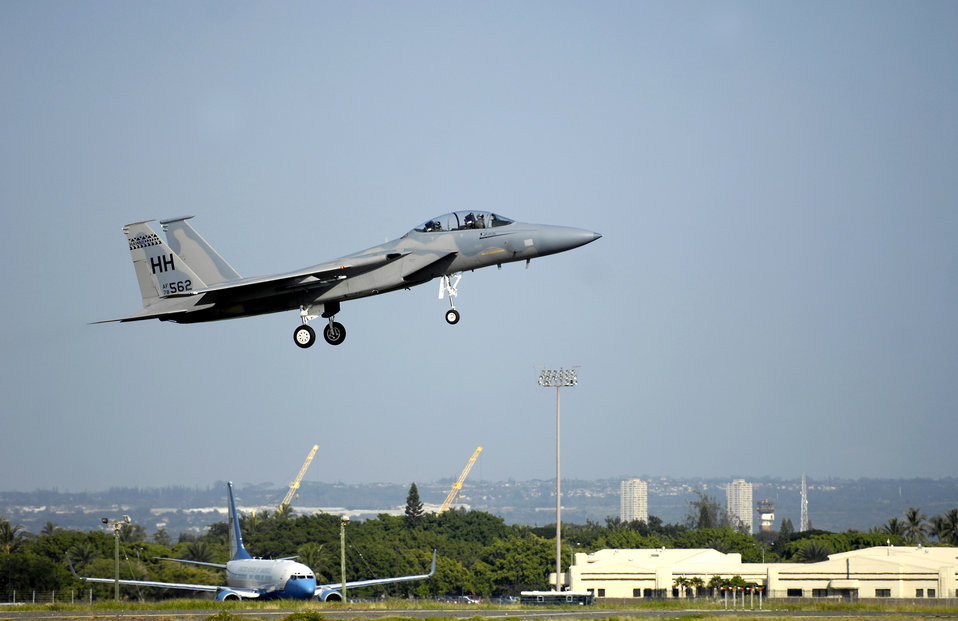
Eagles soar again

An F-15 Eagle prepares to land after flying a mission Jan. 9 at Hickam Air Force Base, Hawaii. The F-15s, from the 199th Fighter Squadron of the Hawaii Air National Guard, have not flown since Air Force officials grounded the F-15 fleet Nov. 3, 2007. Air Combat Command officials cleared a portion of its F-15 A through D models to begin flying today.